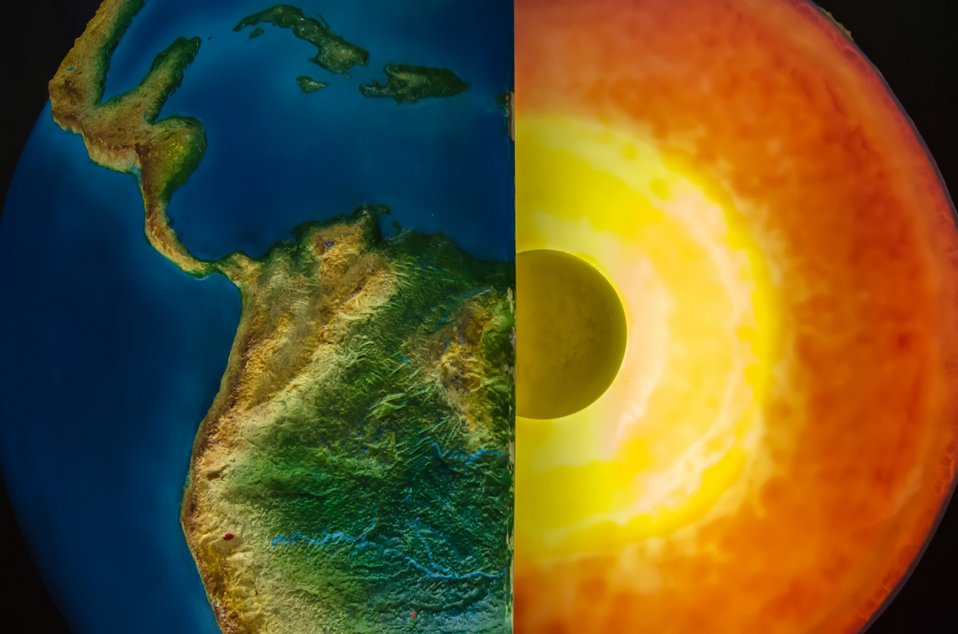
Planet earth center core.